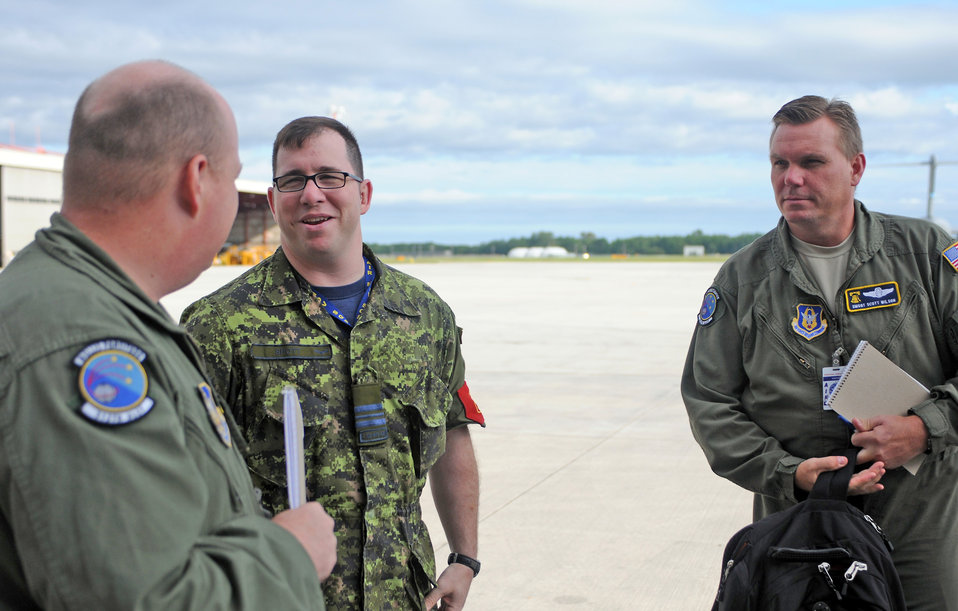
Dover reservists work to form Canadian sister squadron program

Tech. Sgt. Henry Fortney (left) and Senior Master Sgt. Scott Wilson (right) meet with Canadian air force Maj. Aaron Spott, 2 Air Movements Squadron commanding officer, during a visit to the 8 Wing at Canadian Forces Base Trenton, Ontario. Ten aircrew members from Air Force Reserve Command's 512th Airlift Wing at Dover Air Force Base, Del., flew to the Canadian base to spend three days with Royal Canadian Air Force members to forge a partnership and identify future training opportunities for flying, aerial port operations, airlift control and maintenance procedures. Sergeant Fortney is a loadmaster with the 512th Airlift Control Flight and Sergeant Wilson is the 512th ALCF superintendent.